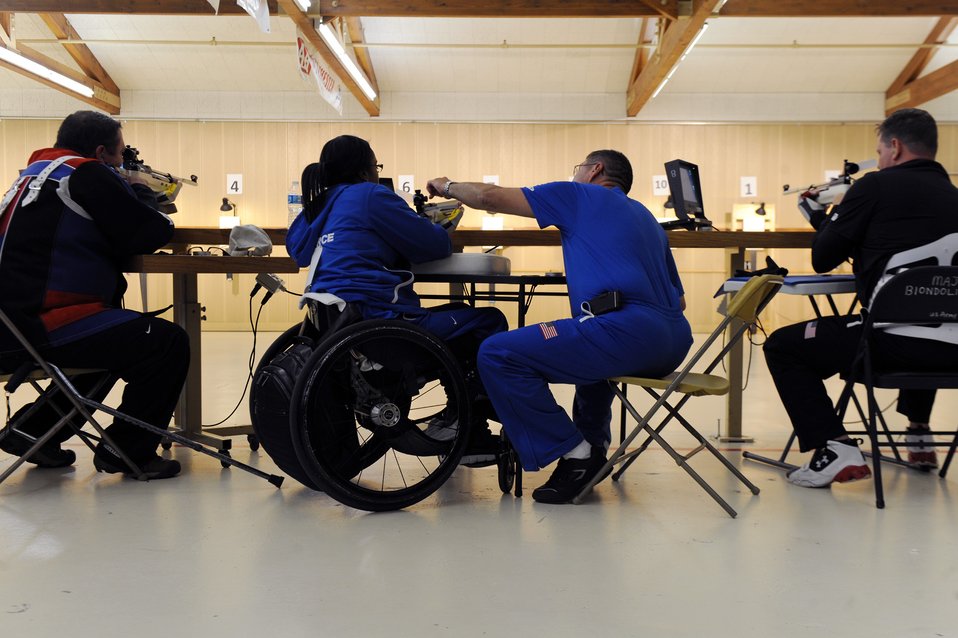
prelims shooting competition

Chatriex Goodson is assisted by Noel Sepulveda before taking aim in the shooting competition of the 2011 Warrior Games May 17, 2011, at the U.S. Olympic Training Center in Colorado Springs, Colo. More than 200 wounded warriors from all the military services are competing in Paralympic-style athletic events May 16 through 21.